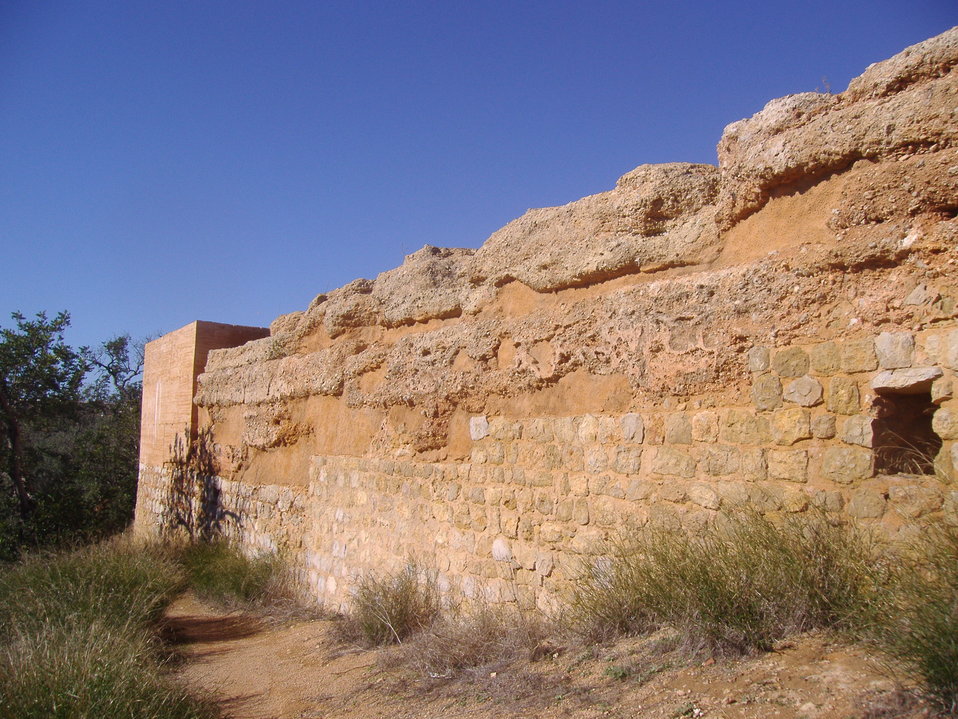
Paderne Castle Portugal 26 th November 2007 by Beechgrove - Southwest corner